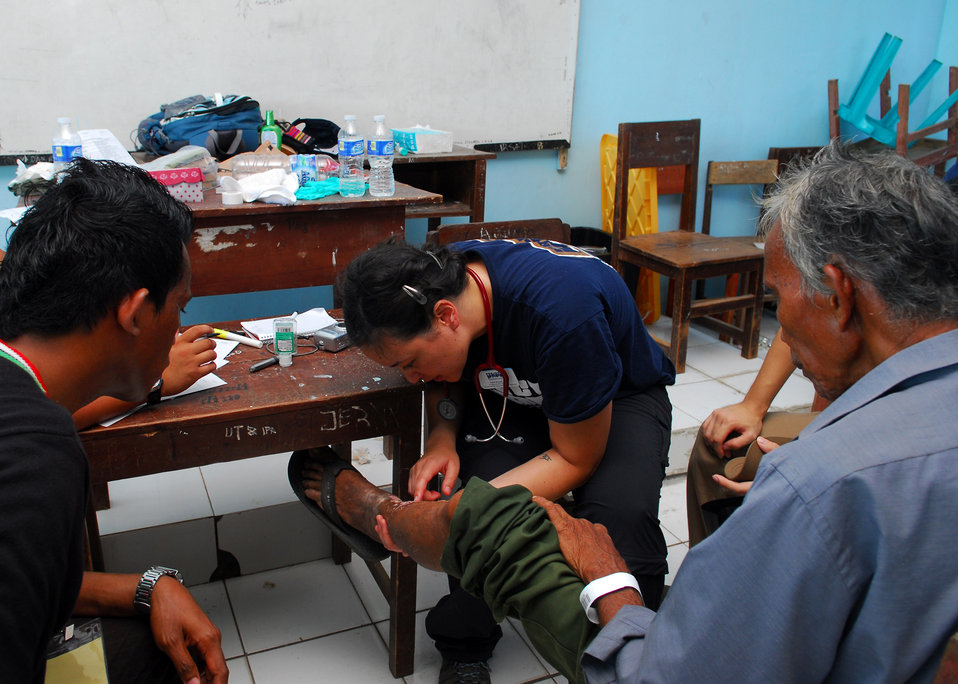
Project HOPE volunteer medical professional Dr. April Kranz examines a patient’s leg during a medical civic action program in Daruba, Indonesia, on July 15, 2010. The Military Sealift Command hospital ship USNS Mercy (T-AH 19) is in the North Maluku Islands conducting Pacific Partnership 2010, the fifth in a series of annual U.S. Pacific Fleet endeavors conducted in Indonesia as a disaster relief exercise aimed at strengthening regional partnerships.